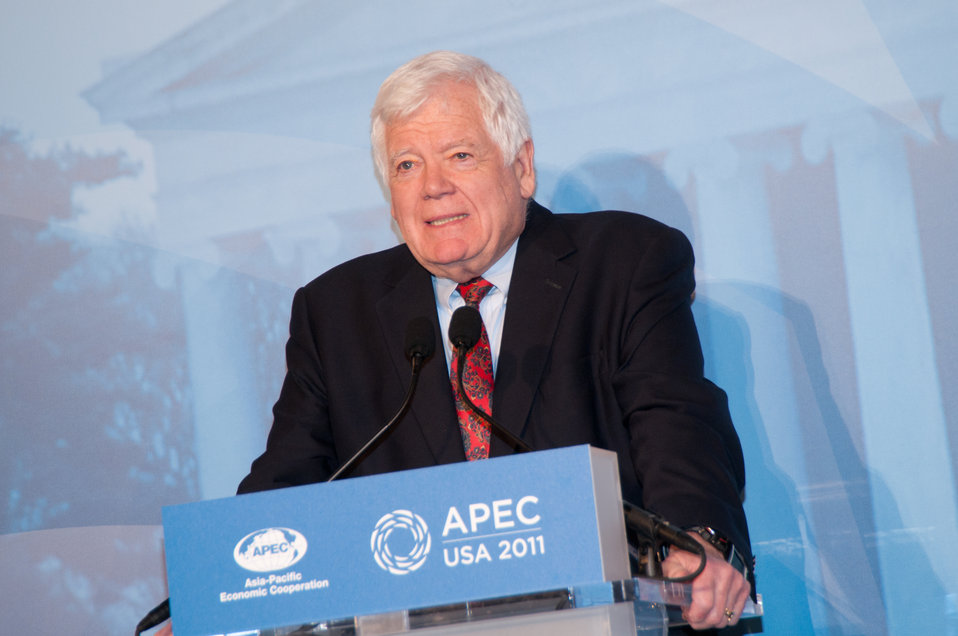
Congressman McDermott Speaks During Welcome Reception

Congressman Jim McDermott of Washington speaks at the First Senior Officials Meeting (SOM1) and Related Meetings of the APEC 2011 USA Host Year during the welcome reception at the Ronald Reagan Building in Washington, D.C., on March 9, 2011. [Fredde Lieberman photo]